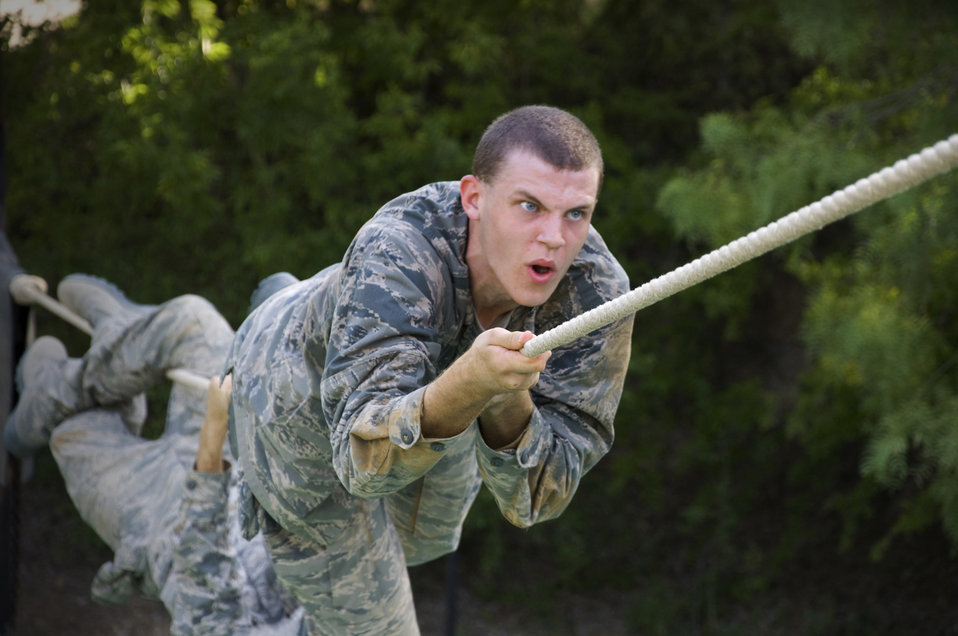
I'm making it across

A basic trainee focuses on crossing a water hazard Sept. 29, 2010, at the confidence course at Lackland Air Force Base, Texas.